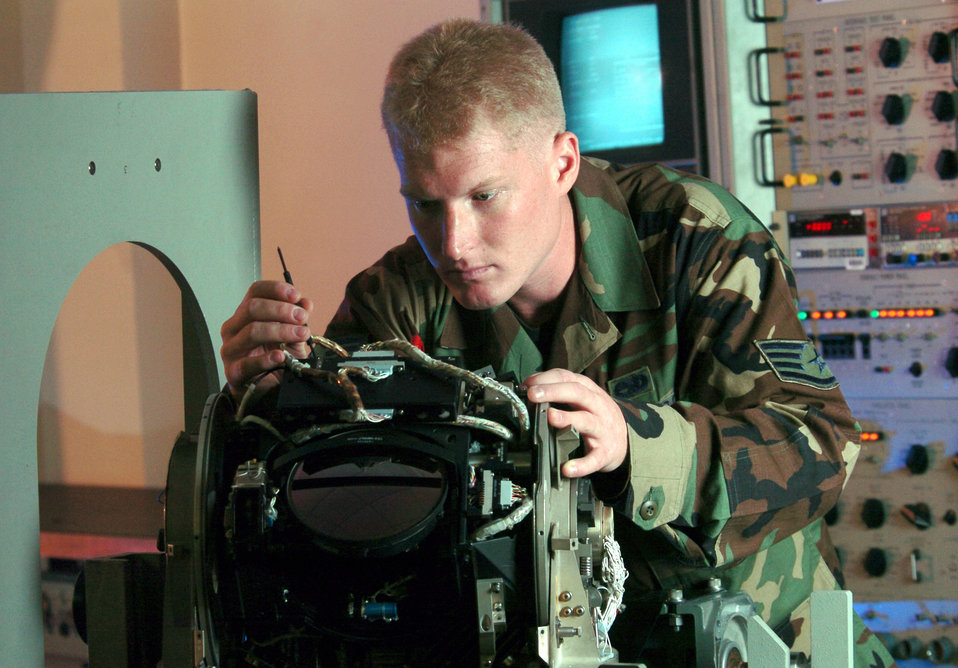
Kadena special ops maintainers team up on tiny troubles

KADENA AIR BASE, Japan -- Staff Sgt. Ehren Wahl repairs an MC-130 infrared receiver during an inspection here. The 353rd Maintenance Squadron Airmen provide maintenance for all MC-130 Combat Talons and Combat Shadows assigned to the 353rd Special Operations Group. Sergeant Wahl is a communications navigation mission systems technician.